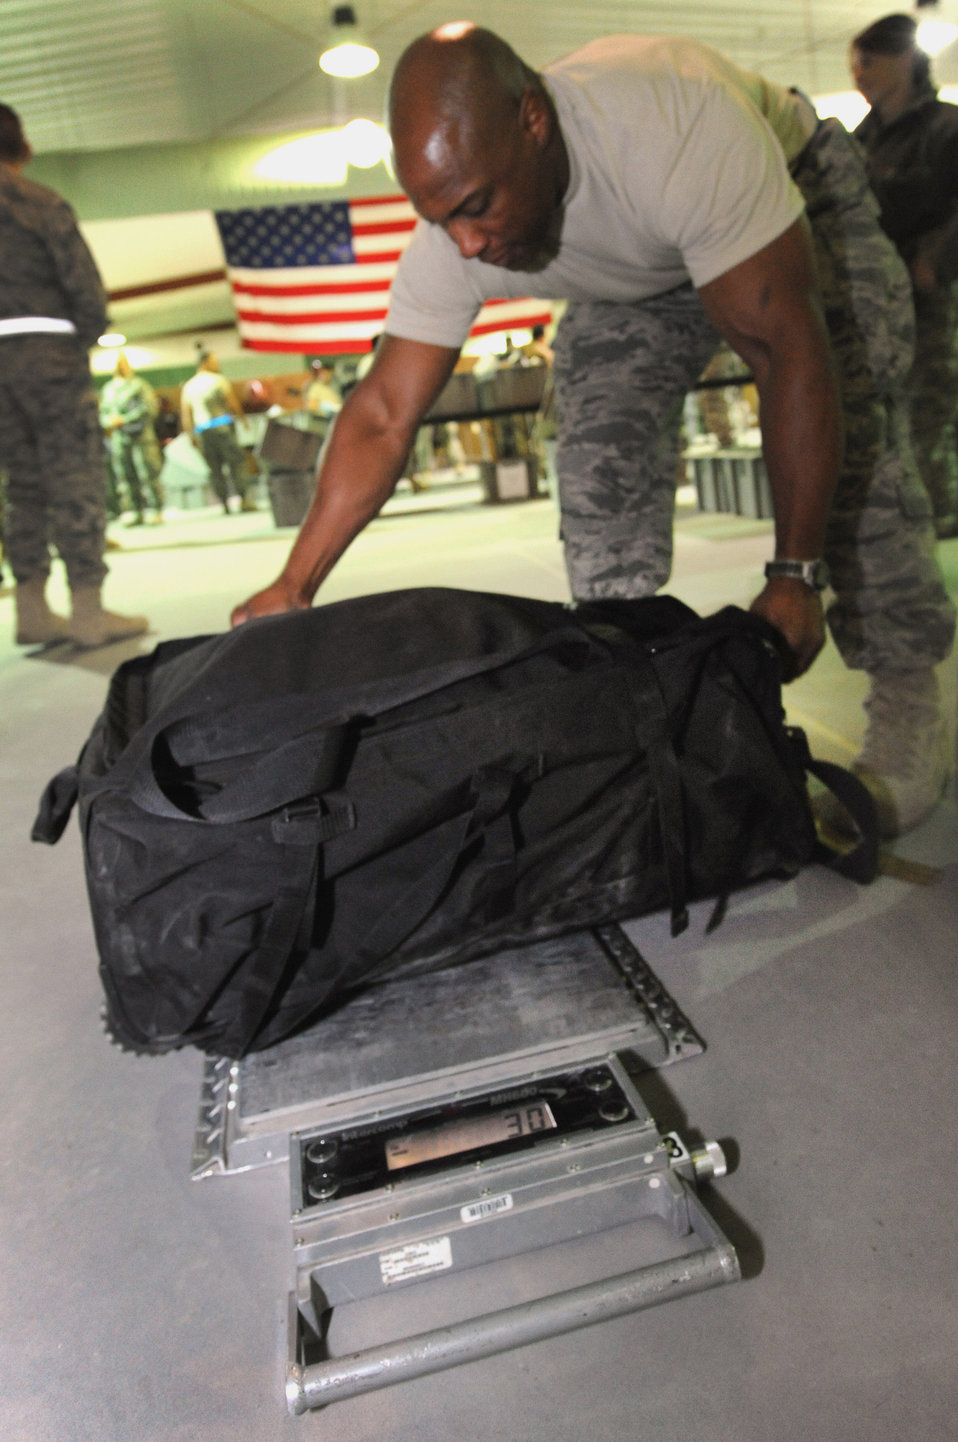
386th AEW customs team

Master Sgt. Sean Abner checks the weight of service member's luggage Dec. 21, 2010, in Southwest Asia. Officials from the 386th Air Expeditionary Wing were able to cut down the redeployment process with the implementation of an all-Air Force customs process, a first in the Air Force Central Command area of responsibility.